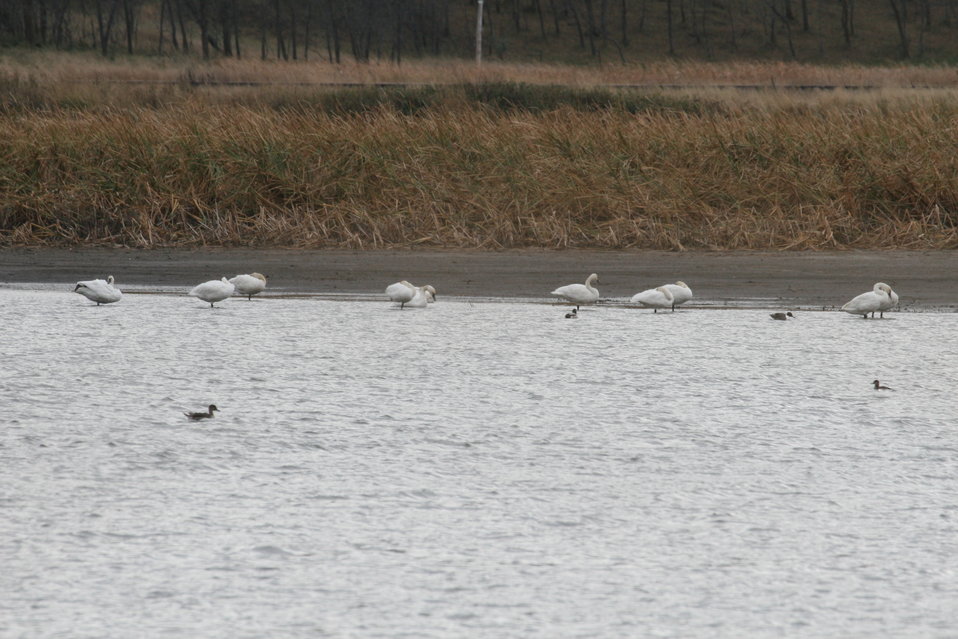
Fall on the Refuge - Tundra Swans at Rest

As their common name implies, the Tundra Swan breeds in the Arctic and subarctic tundra, where they inhabit shallow pools, lakes and rivers.